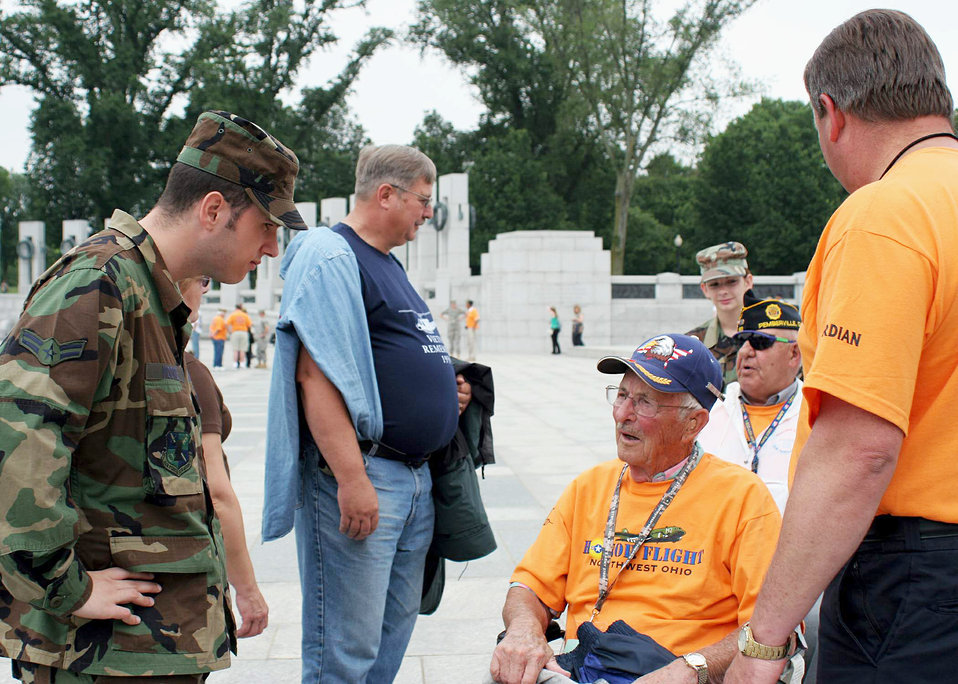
Servicemembers join World War II vets at National Mall

Airman 1st Class Kyle Moore listens as former Army Cpl. Carl Taber stops at the World War II memorial to describe the conditions in the North African theater of operations May 27 in Washington, D.C. Mr. Taber, also a veteran of the Battle of the Bulge, was on his way to see where the major Atlantic battles were recognized at the memorial when Airman Moore asked about his experiences during the war. Airman Moore is a network analyst assigned to the 22nd Intelligence Squadron at Fort Meade, Md.